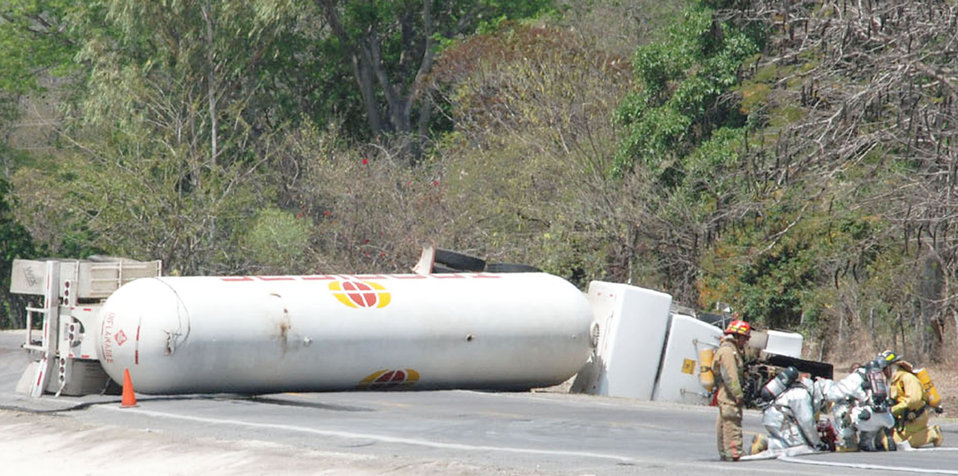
American servicemembers respond to overturned fuel tanker

Firefighters from Comayagua and Soto Cano Air Base, Honduras, set up a water hose to cool an overturned fuel tanker approximately 8 kilometers north of the base March 13 in Honduras. The tanker overturned after hitting a horse around 8 a.m. and caused traffic to be halted in both directions for more than 24 hours.